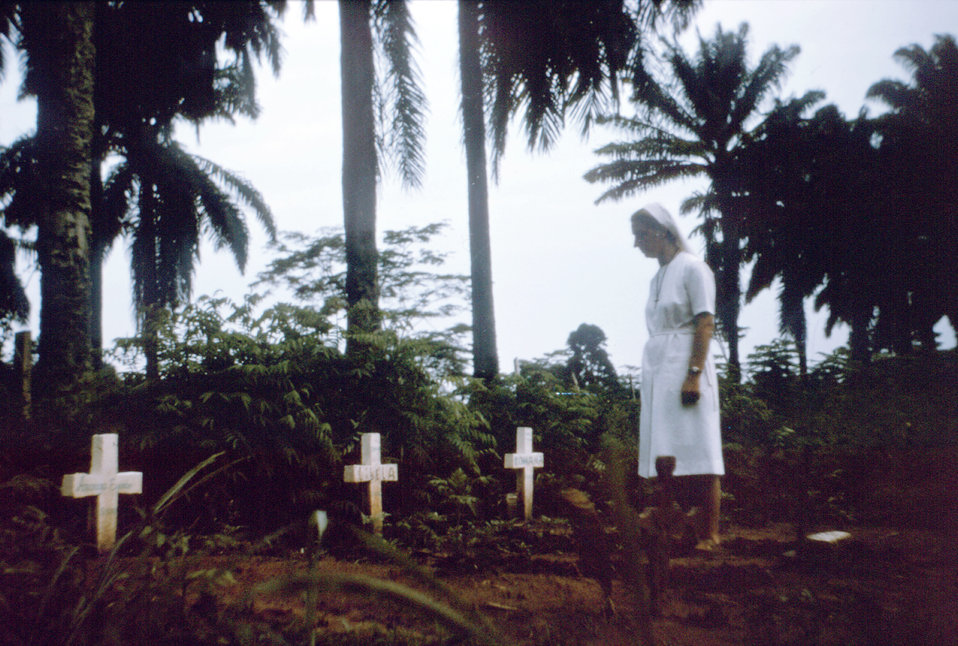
This photograph showed Sister Marietta as she walked among the grave sites of her colleagues that had perished during the Zaire (now known as the Democratic Republic of the Congo) Ebola outbreak of August, 1976.